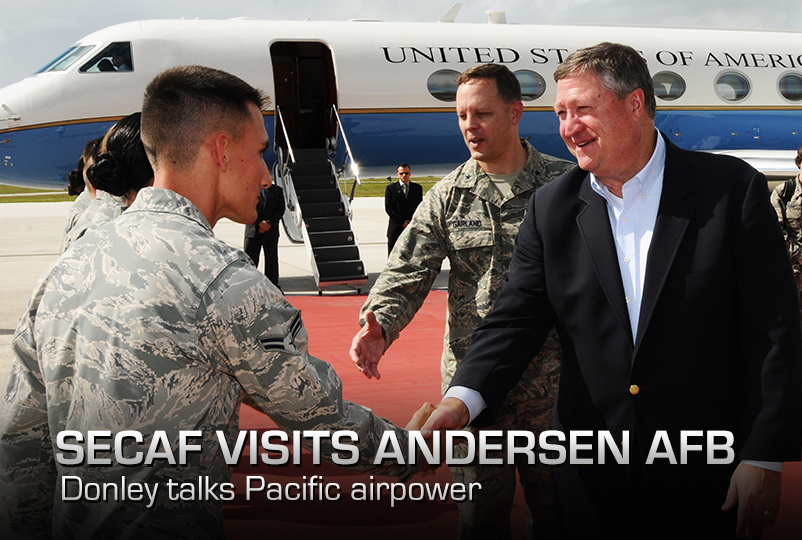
SecAF visits Andersen AFB